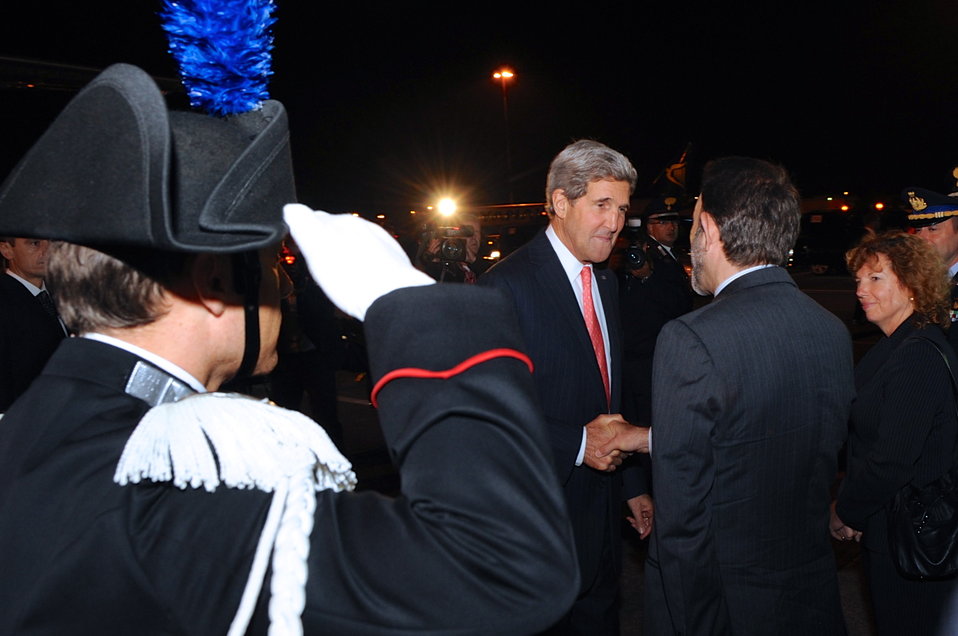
Secretary Kerry Arrives in Rome

U.S. Secretary of State John Kerry shakes hands with Marco della Seta, Deputy Chief of Protocol at the Italian Ministry of Foreign Affairs, upon arriving in Rome, Italy on October 22, 2013.